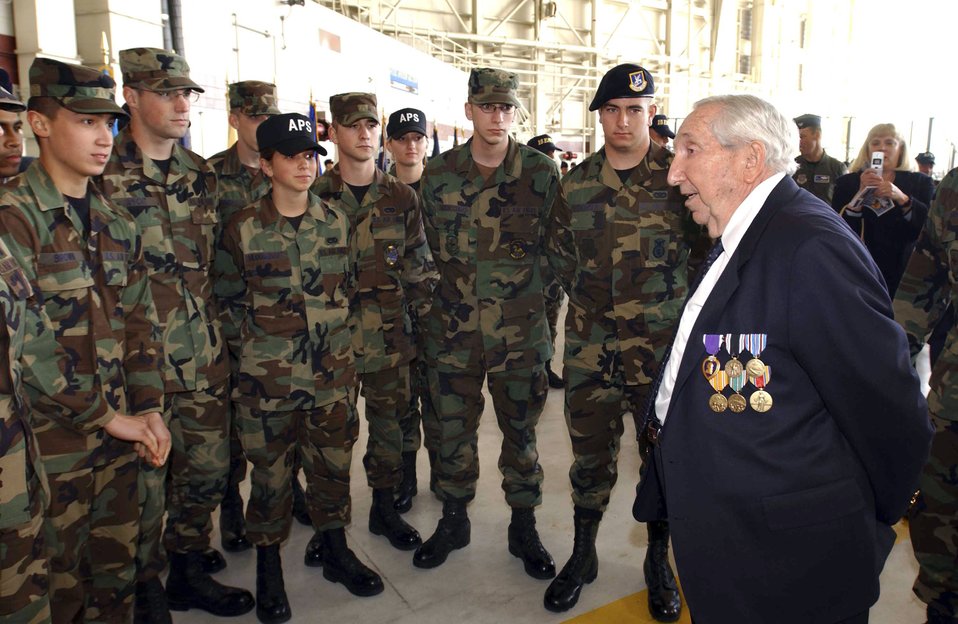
Purple heart

Leo Bach, a World War II veteran, speaks with Airmen after a medal ceremony at Travis Air Force Base, Calif. March 21.